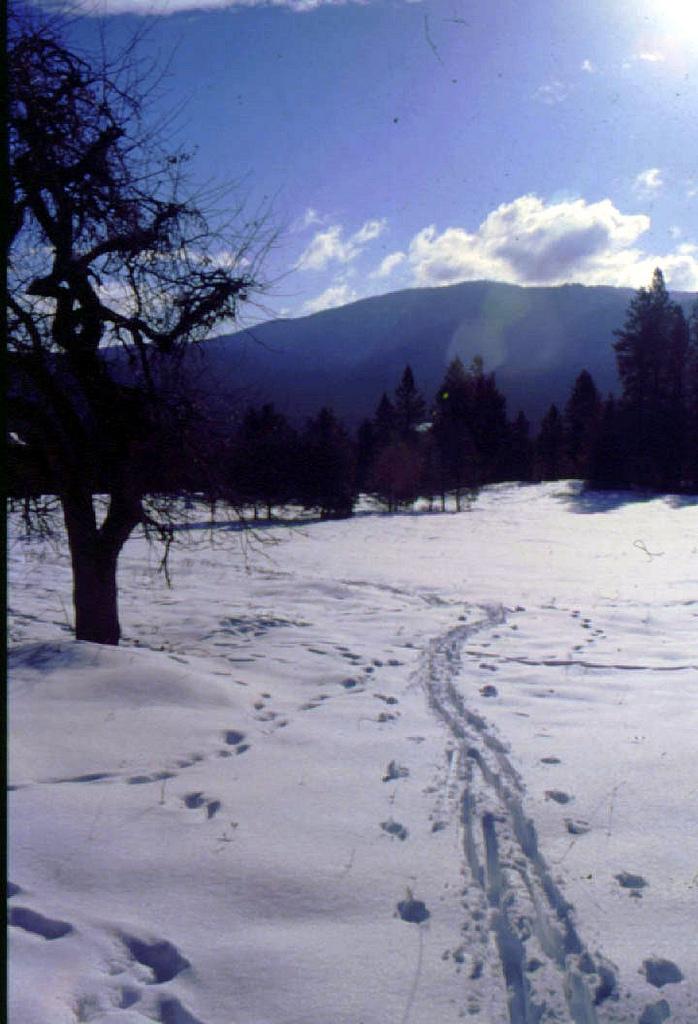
Ski tracks

Little Pend Oreille National Wildlife Refuge, WA